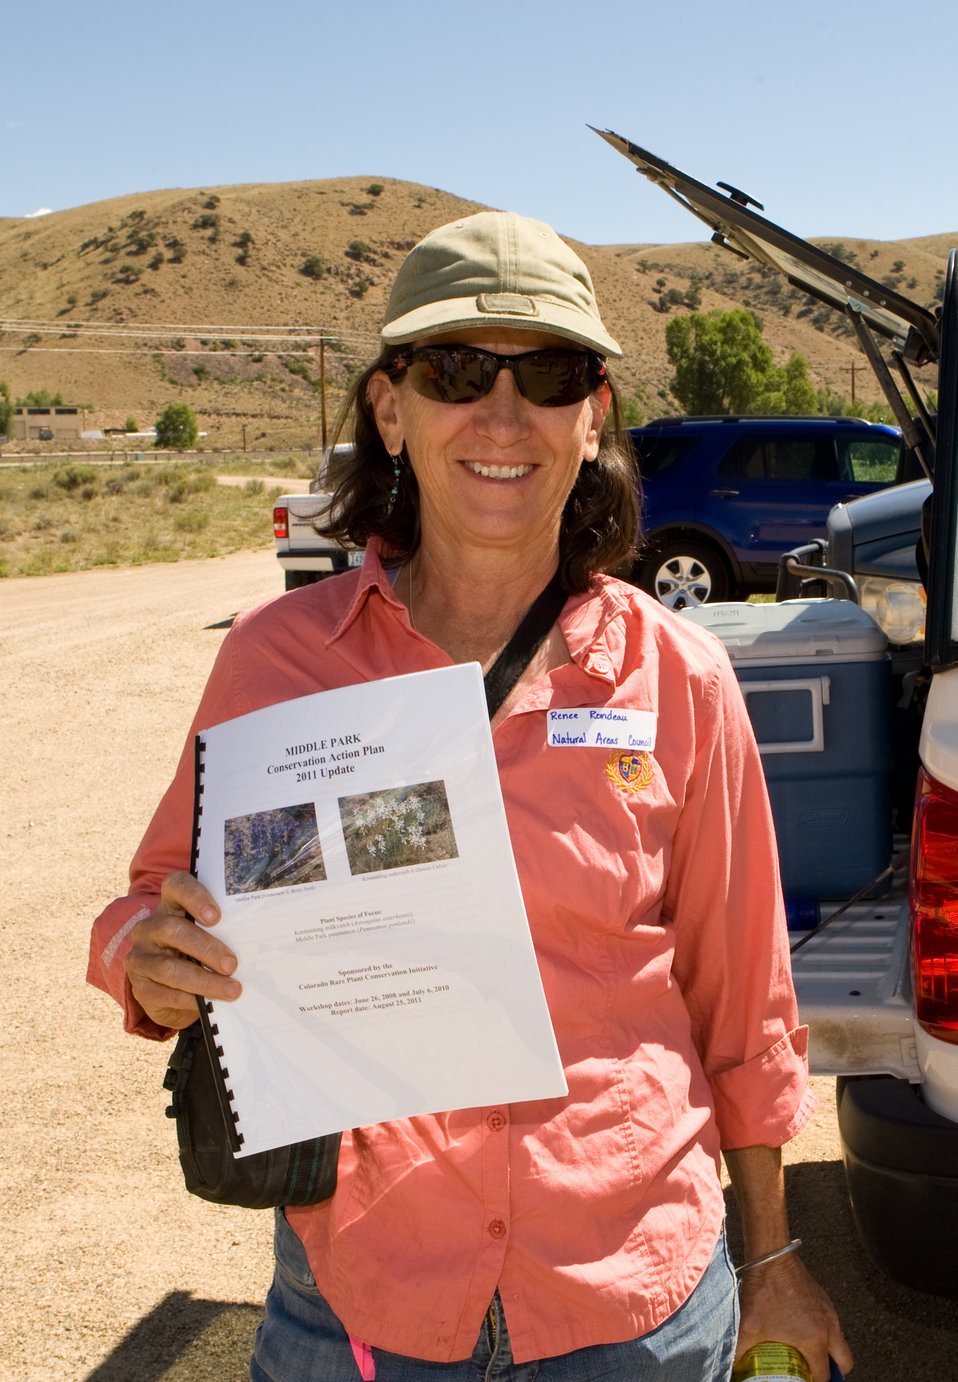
Colorado Rare Plant Conservation Initiative

The Colorado Rare Plant Conservation Initiative (RPCI) is a partnership of 23 statewide and regional agencies, private organizations, and academic institutions working to conserve 121 rare plants in Colorado. As part of these efforts the group developed the Colorado Rare Plant Conservation Strategy, developed Best Management Practices to reduce energy development impacts, addressed climate change, and developed focused strategies for the conservation of individual species at eight priority landscapes. The group has also worked to coordinate volunteer efforts for plant conservation across the state.